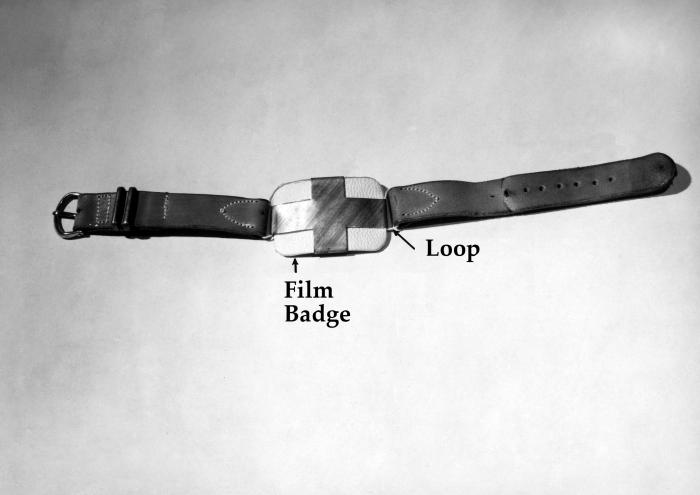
This historic 1947 image, provided by the Center for Disease Control's (CDC), National Institute for Occupational Safety and Health (NIOSH), and obtained from the Nat. Institutes of Health's (NIH) Photographic Unit, depicted a metallic arm band designed by the NIH, which contained a photosentitive film. Analyzed on a regular basis, this simple device was intended to reveal whether or not the wearer was being subjected to a high level of radioactivity. The higher the levels of radioactivity to which the wearer was exposed would be revealed as the film's changes in appearance. See PHL #9586 for a look at the band on a wearer's wrist.